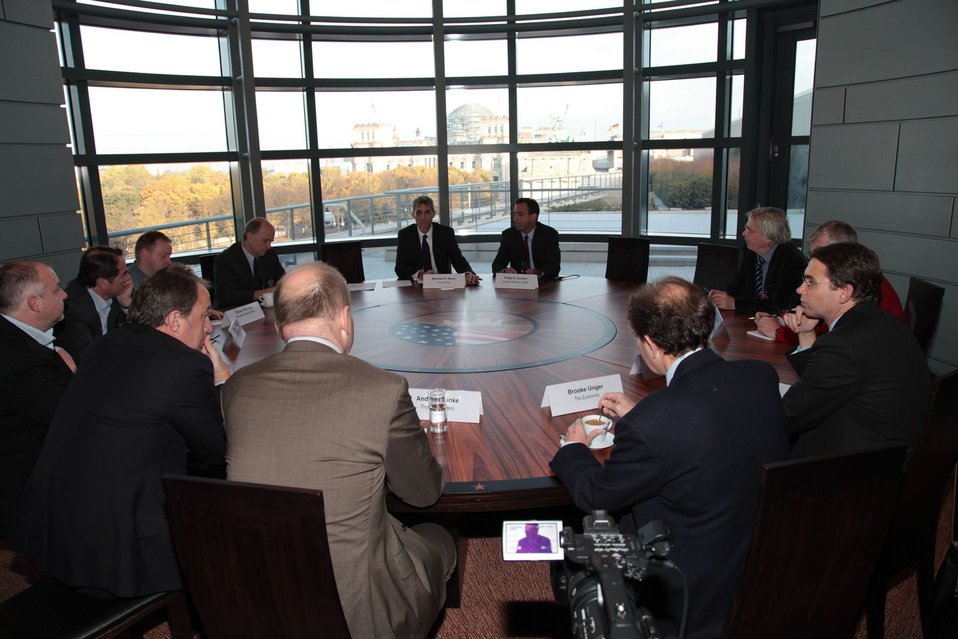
Assistant Secretary Gordon Visits Germany

Assistant Secretary of State forEuropean and Eurasian Affairs Philip H. Gordon visits Berlin, Germany. The Reichstag and the Quadriga on the Brandenburg Gate provide the background for the press round-table discussion in October 27, 2010.